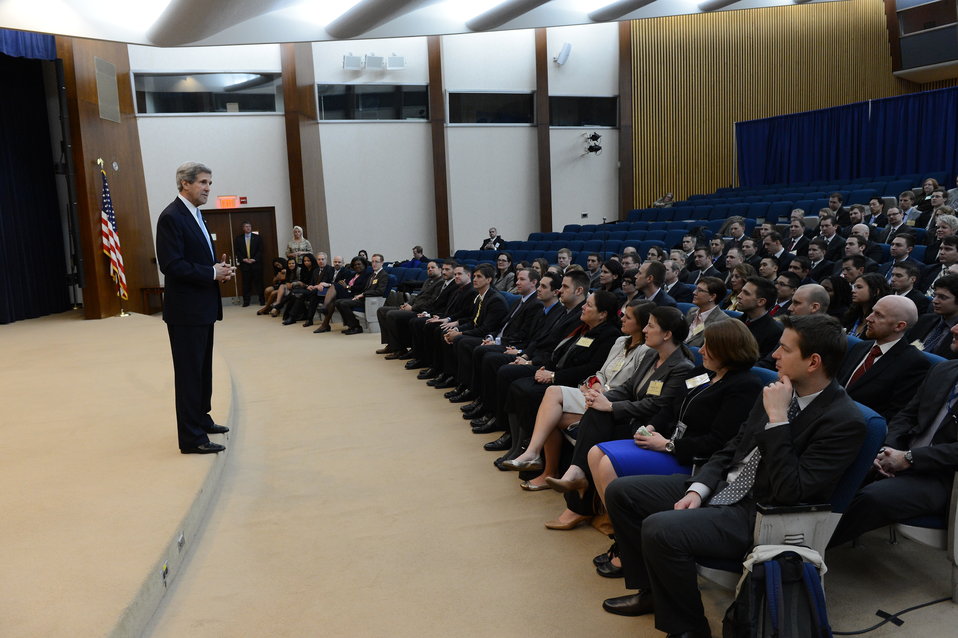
Secretary Kerry Delivers Remarks at a Foreign Service Officer Orientation

U.S. Secretary of State John Kerry delivers remarks at a Foreign Service Officer orientation at the U.S. Department of State in Washington, D.C. on March 29, 2013.